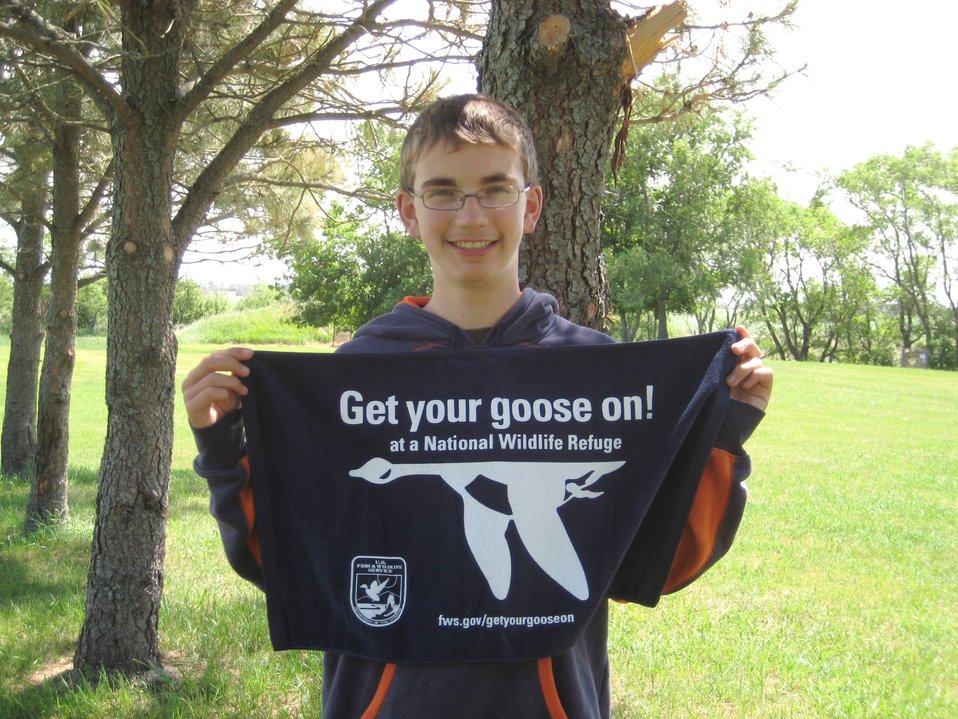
Get Your Goose On!

Taken at Tewaukon National Wildlife Refuge.